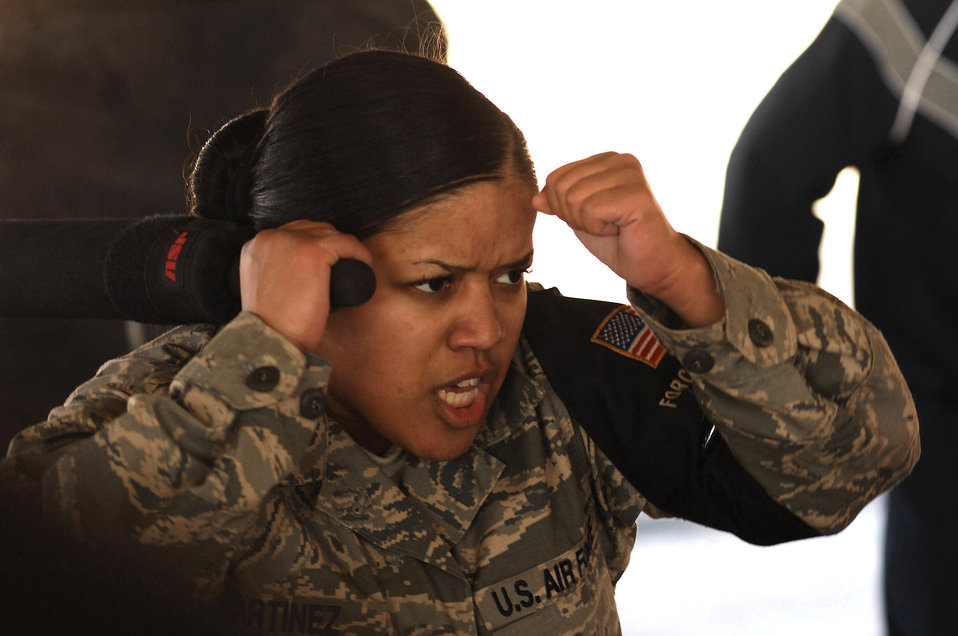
The non-lethal force be with you

Airman 1st Class Carla Martinez gets her game face on as she prepares to defend herself Jan. 24 during self-defense tactics training with batons at an air base in the Southwest Asia . The self-defense training familiarizes Airmen with how to use non-lethal force to defend themselves. Airman Martinez is assigned to the 386th Expeditionary Security Forces Squadron and is deployed in support of Operation Iraqi Freedom.